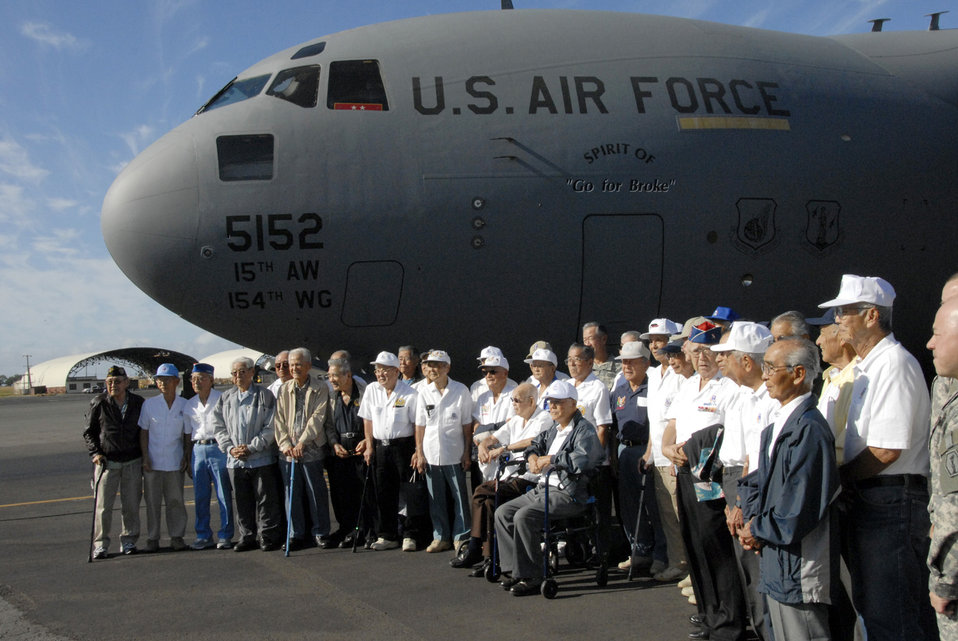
WWII vets fly

Surviving members of the famed 442nd Regimental Combat Team and the 100th Infantry Battalion pose in front of one Hickam Air Force Base's C-17 Globemaster III aircraft the